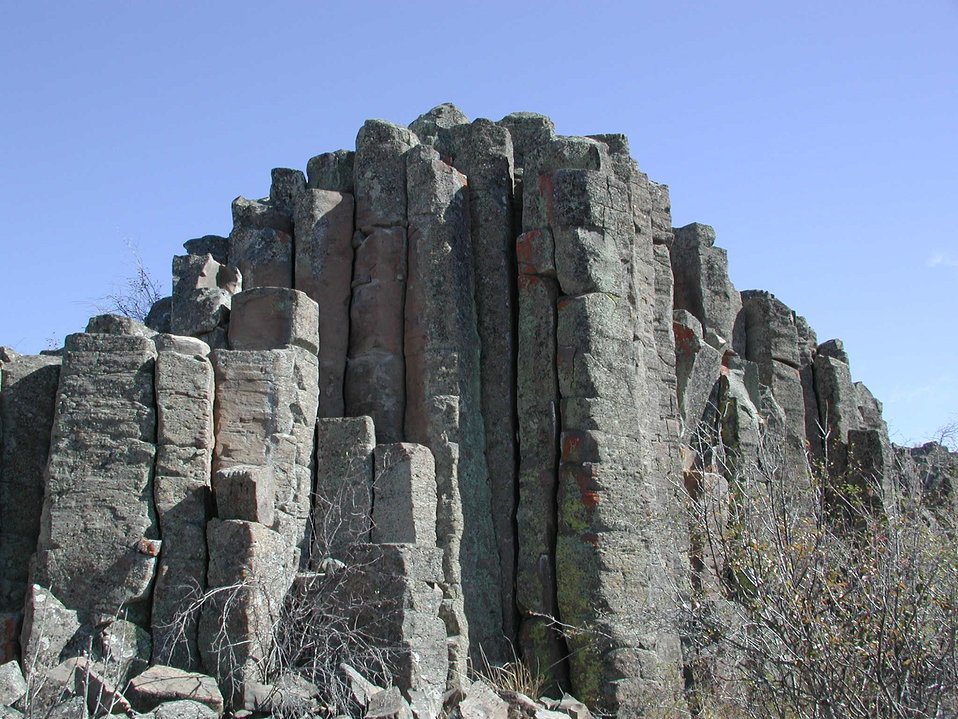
Typical hezagoanl cooling fracture pattern of the columnar baslat seen at Sprague during the Public Lands Day tour.